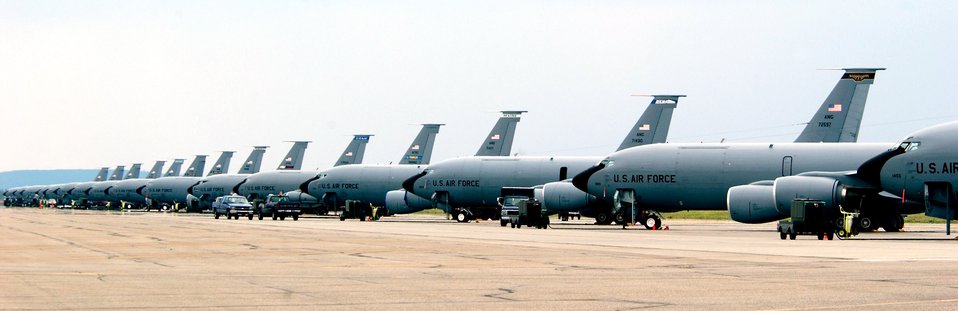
Tanker Task Force keeps Northern Edge flying

KC-135 Stratotankers from various units are at Eielson Air Force Base, Alaska, for Exercise Northern Edge 2006, a joint training exercise. It is one of a series of U.S. Pacific Command exercises that prepare joint forces to respond to crises in the Asian Pacific region.